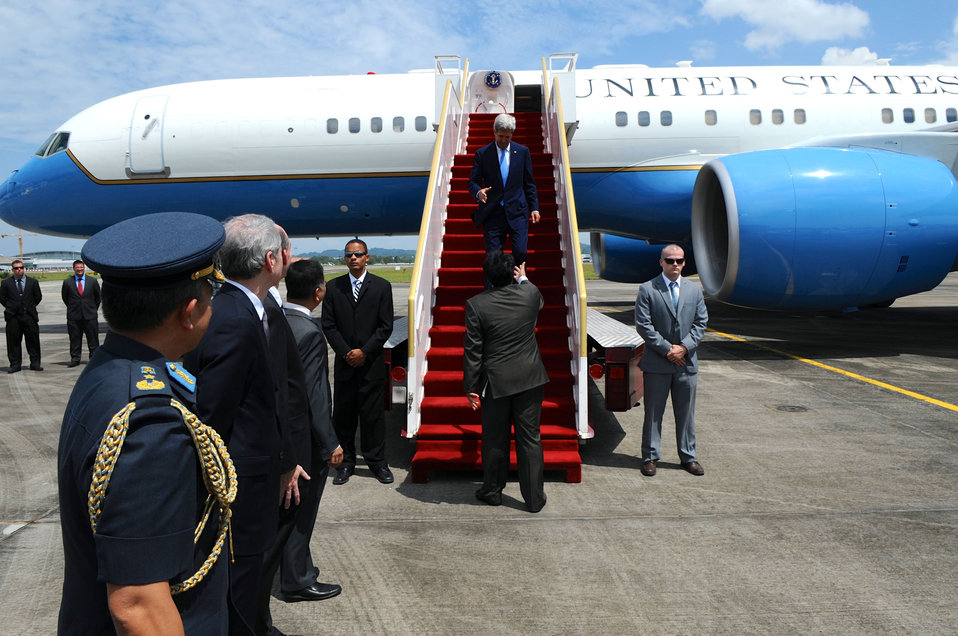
Secretary Kerry Arrives in Bandar Seri Begawan, Brunei

U.S. Secretary of State John Kerry disembarks from the plane after arriving in Bandar Seri Begawan, Brunei, on October 9, 2013, for U.S.-ASEAN Summit meeting.